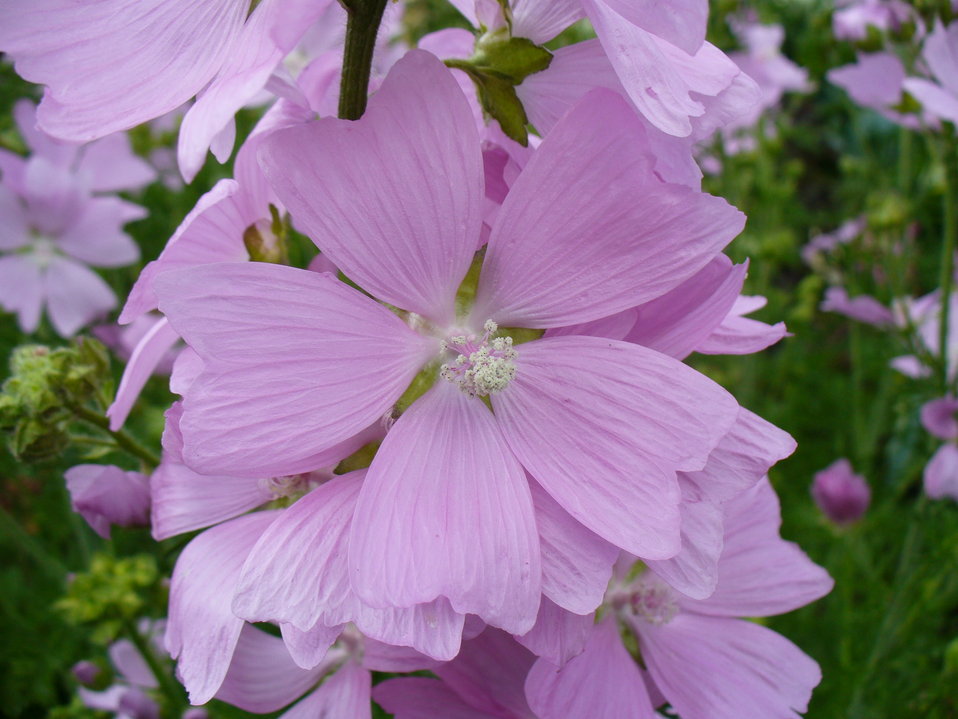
I am the originator of this photo. I hold the copyright. I release it to the public domain. This photo depicts a flower.